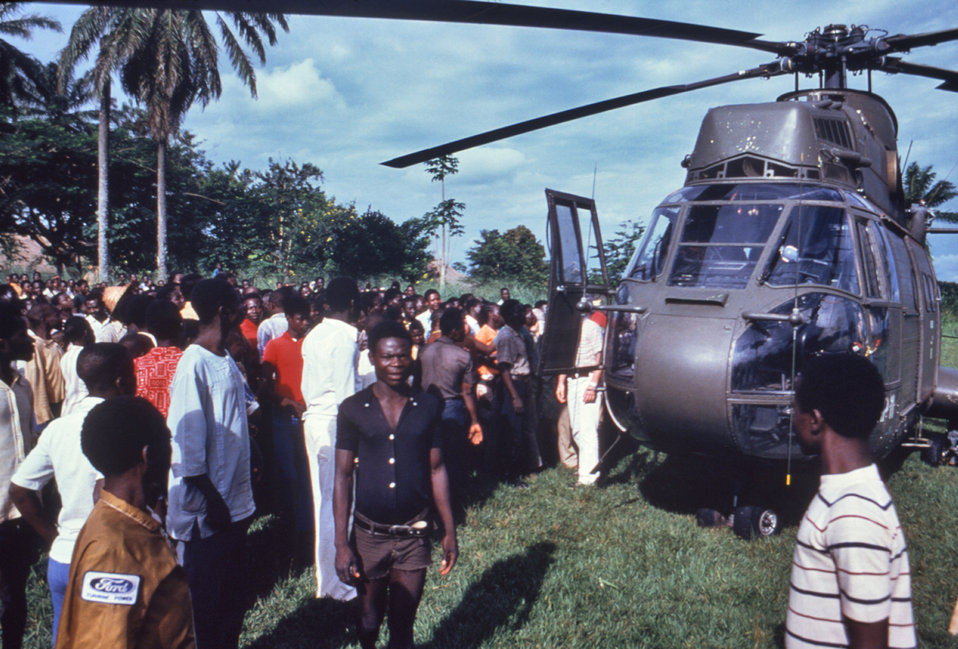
This 1976 photograph depicted a helicopter that had just landed after transporting investigators across the Yambuku, Zaire region during an Ebola outbreak of that year.